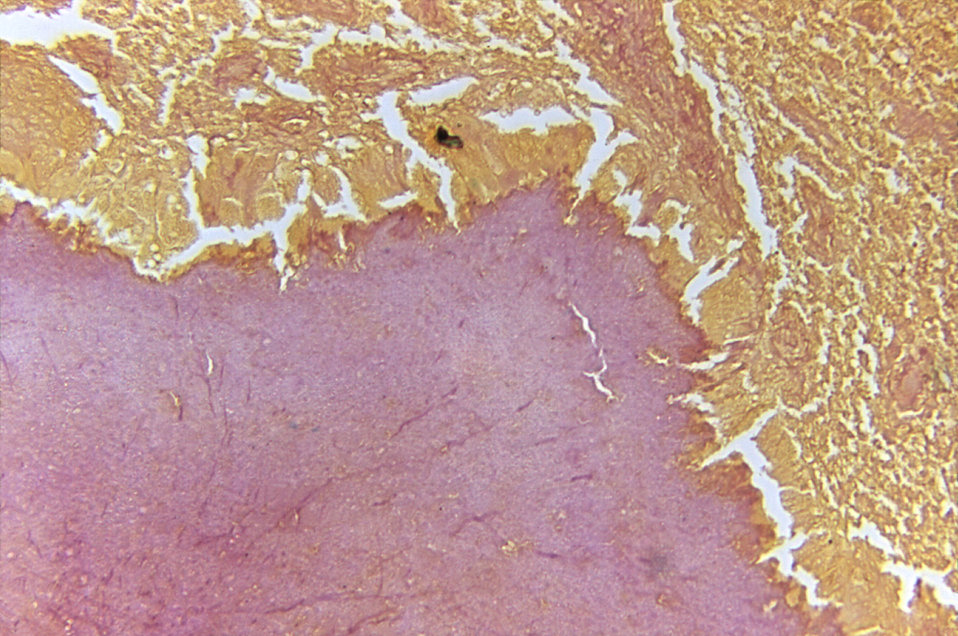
Magnified 125X, this photomicrograph depicted some of the cytoarchectural details at the site of a spontaneous infection in a 5-week-old chicken due to a hyphomycete, Ochroconis gallopavum, formerly klnown as Dactylaria gallopavum. In this particular instance, this chicken was the victim of a 1967 outbreak of dactylariosis in Australia. This slide was stained using the PAS, modified Grindley technique, and was provided by Dr. M.D. Connole of Australia.